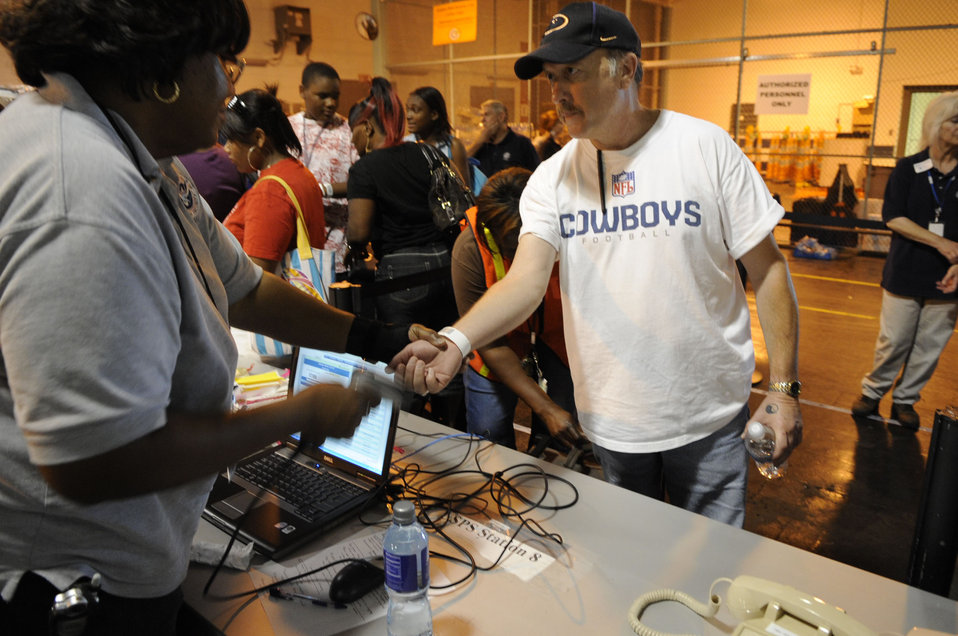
Airmen there as hurricane evacuation begins

Evacuees leaving before Hurricane Gustav hits the Gulf Coast, check in at the Louis Armstrong International Airport in New Orleans Aug. 30. They will be boarding flights that officials with the Federal Emergency Management Agency and Department of Defense have chartered to transport citizens who otherwise could not leave on their own to destinations safely outside the hurricane's path.